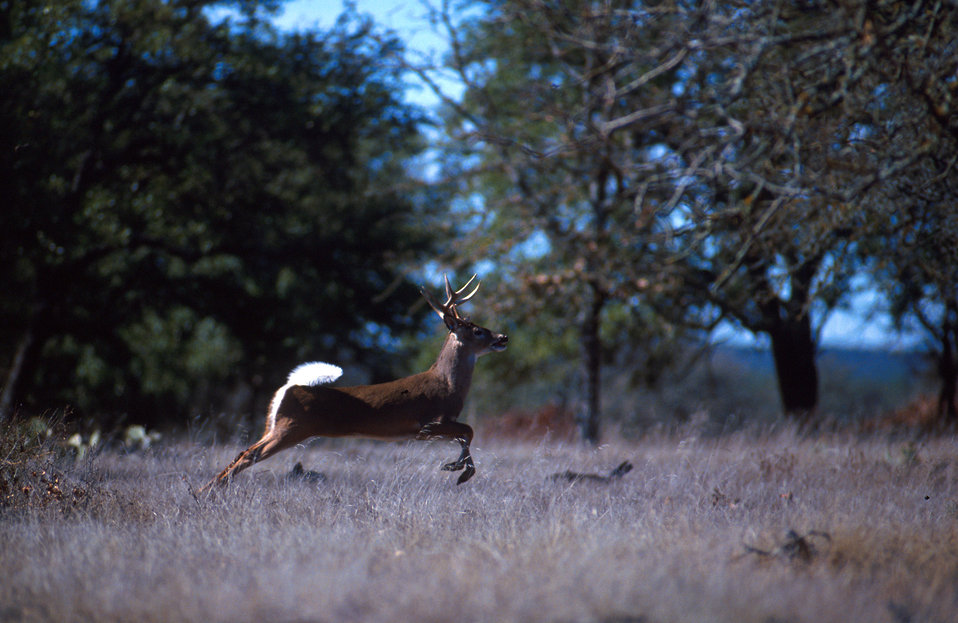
A White-tail deer leaps through a field.